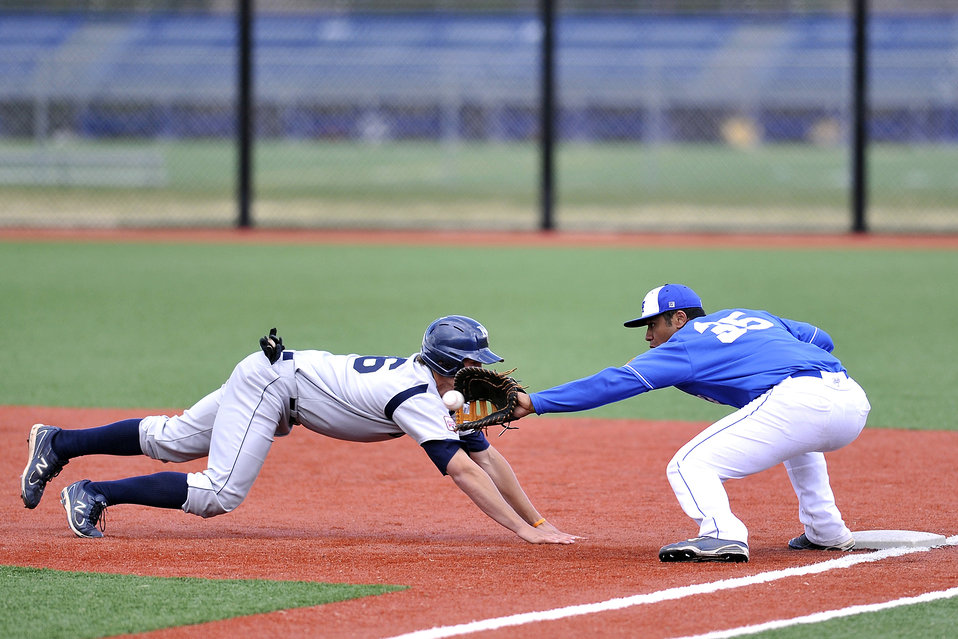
You're out!

Northern Colorado's Ben Packard is about to be tagged out by Air Force Academy Falcons freshman Seth Kline during 2nd-inning action April 19, 2011, at Falcon Field in Colorado Springs, Colo.